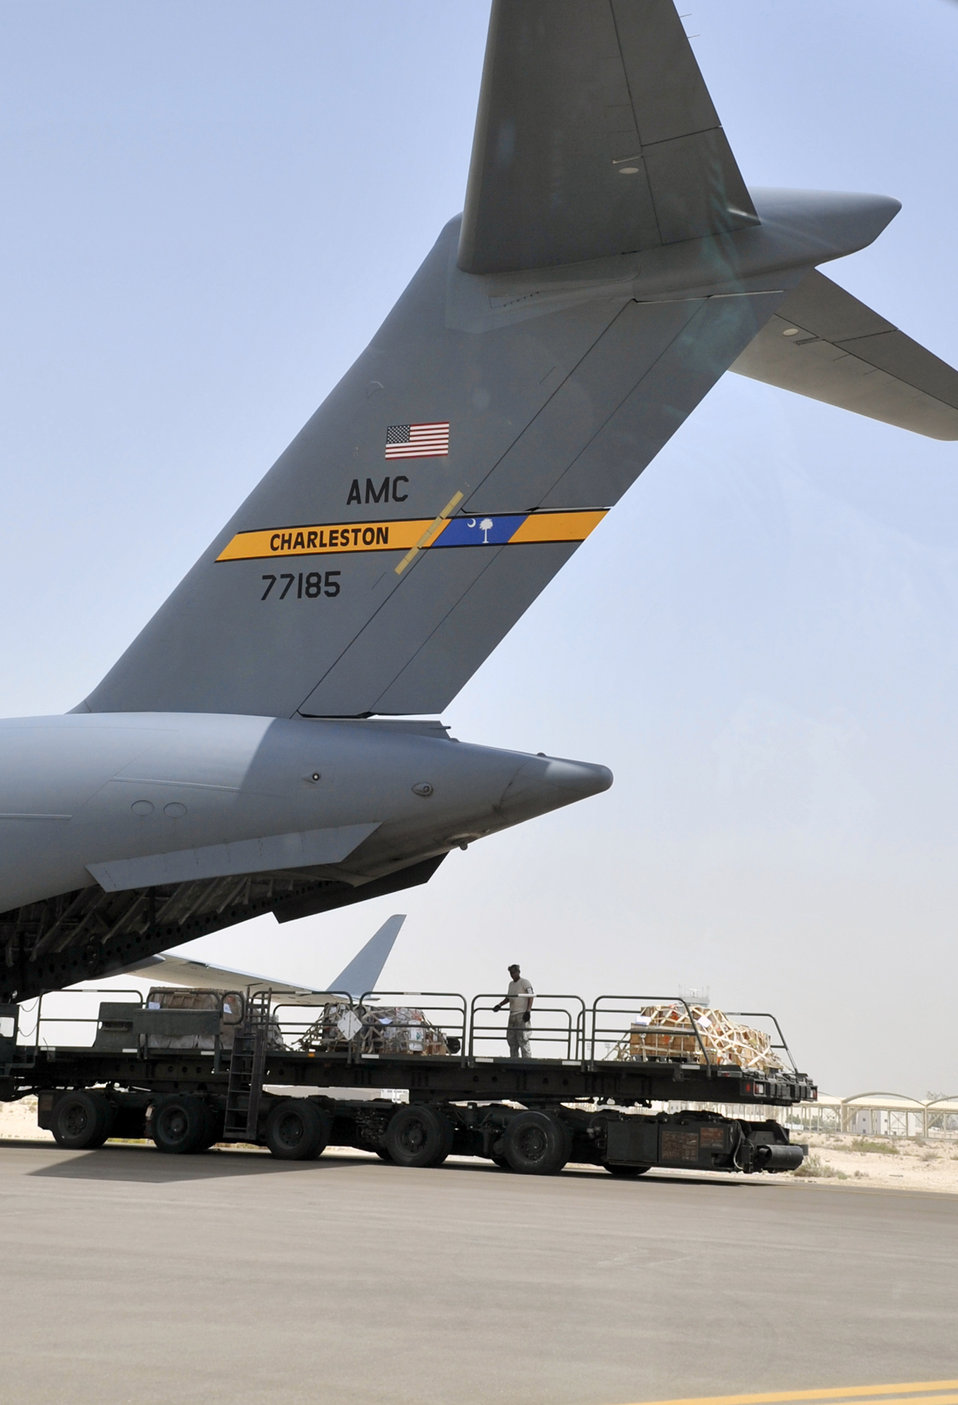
Aerial porters keep the mission moving in Southwest Asia

Aerial porters work on the flightline during operations May 19, 2010 at a base in Southwest Asia. The 380th Air Expeditionary Wing supports operations Iraqi Freedom and Enduring Freedom and the Combined Joint Task Force-Horn of Africa. All aerial porters deployed to the 380th AEW are deployed from the 89th Aerial Port Squadron at Joint Base Andrews, Md.